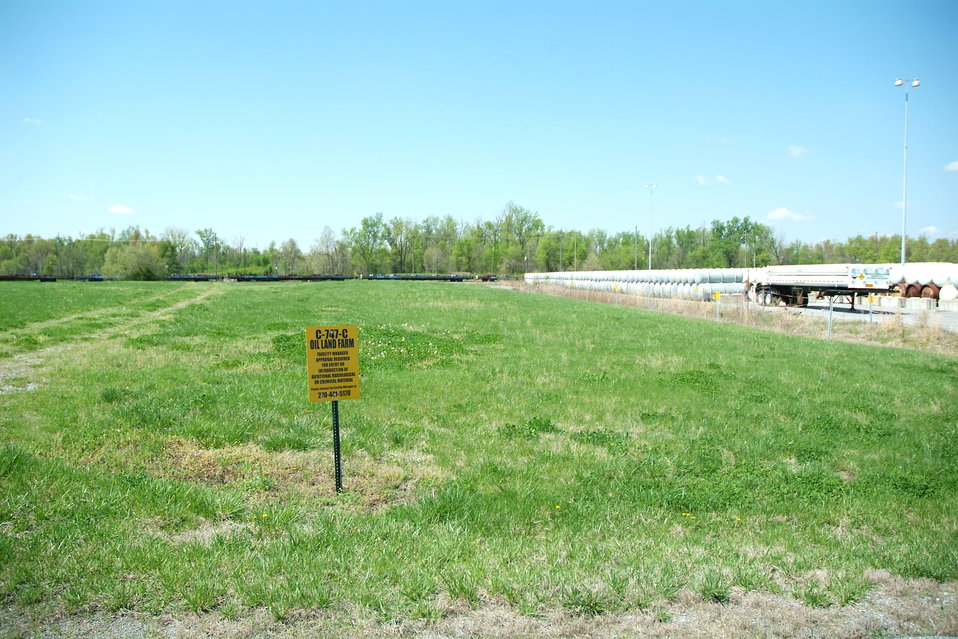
Old Oil Landfarm (after)

The old oil landfarm is now merely grass.